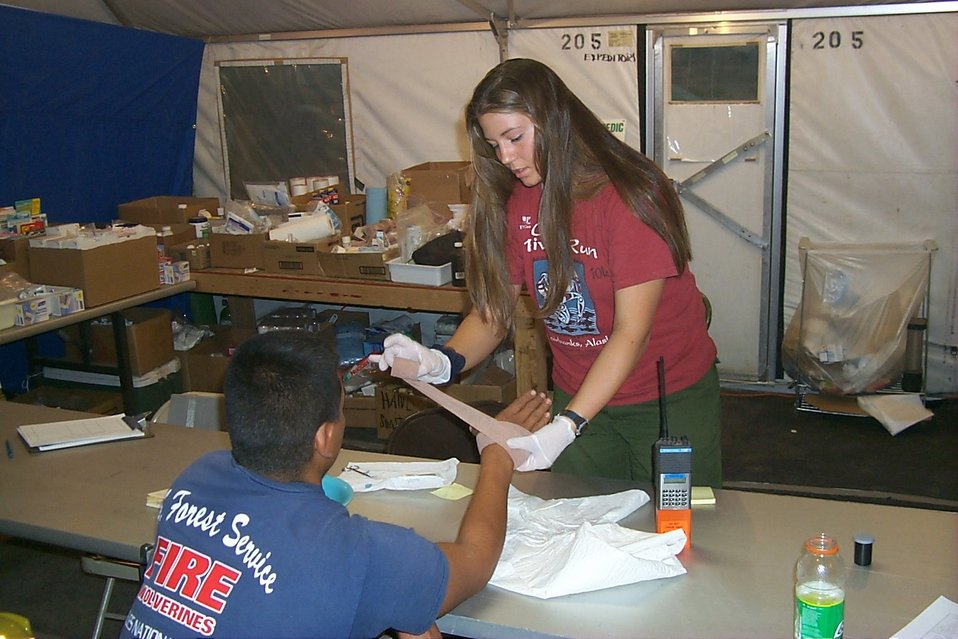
First Aid Fire Clearwater Fire Salmon Field Office USRD Upper Snake River District